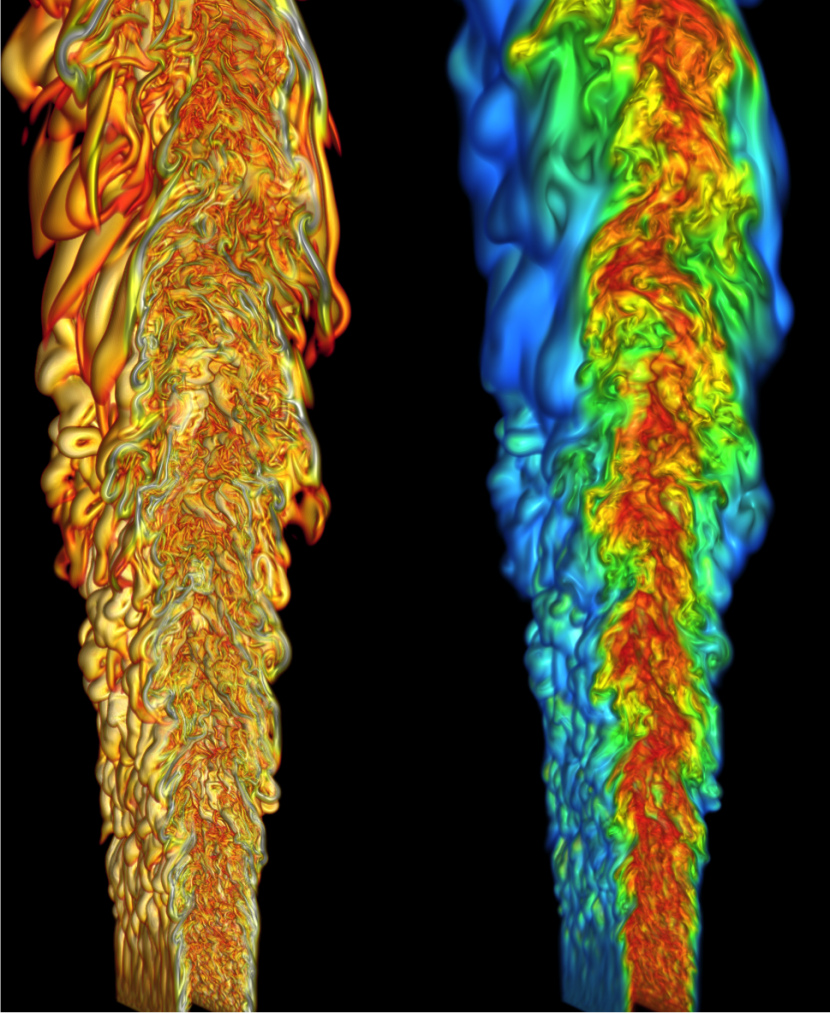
At Oak Ridge National Laboratory, a direct numerical simulation with the S3D code used to model turbulent combustion shows jet-flame stabilization of a simple fuel, ethylene, as it mixes with heated, co-flowing air.

An indicator of mixing rate, left, shows white for highest and orange for lowest values. The degree of mixedness is shown in red-to-blue spectrum at right, where ethylene is red and co-flowing, heated air is blue. This line of research is critical to the American energy economy, given that three-quarters of the fossil fuel used in the United States goes to powering cars and trucks, which produce one-quarter of the country's greenhouse gases.